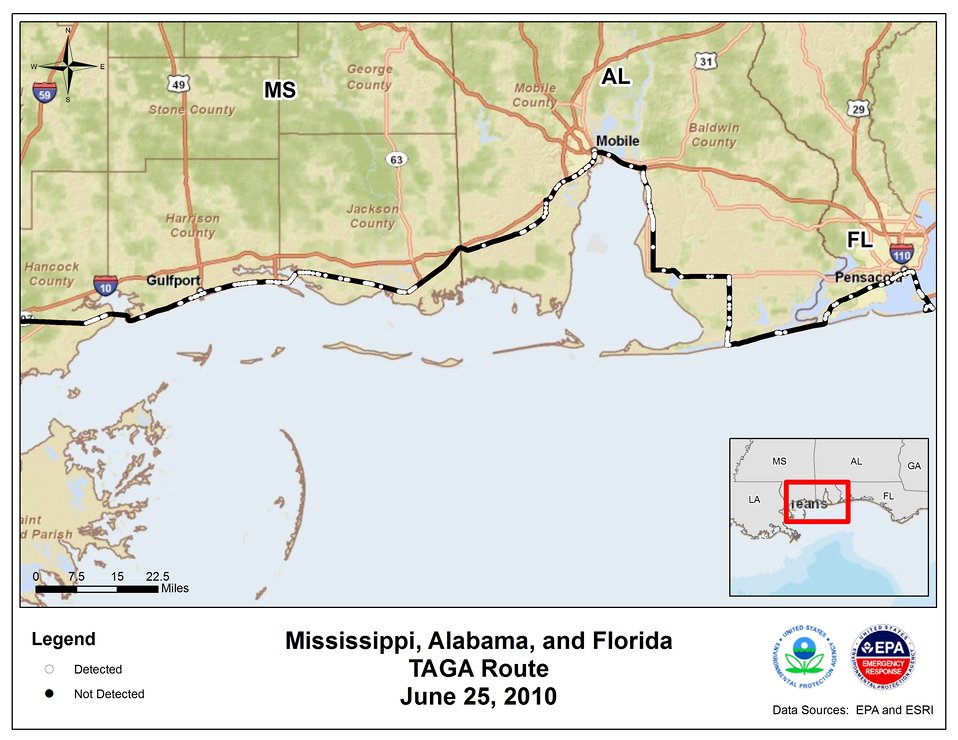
EPA TAGA Air Monitoring Locations June 25, 2010